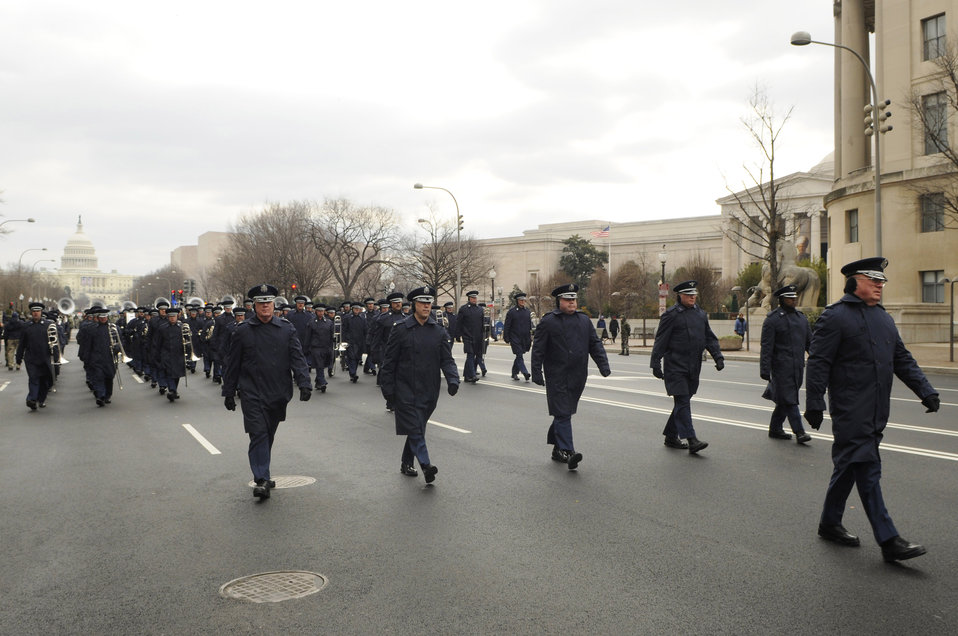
Practice makes perfect

Members of the Air Force Band march down Constitution Avenue during a practice run of the inauguration parade for President-elect Barack Obama Jan. 11 in Washington, D.C.